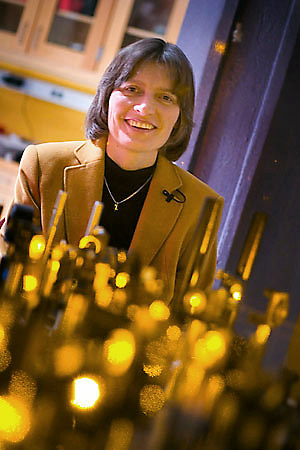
Research to improve fiber optics and computing

Dr. Lene Hau, Mallinckrodt professor of physics and applied physics at Harvard University, has discovered applications through her work with light and matter that will impact the Air Force by providing significant advances in computing, optical networks and quantum cryptography.